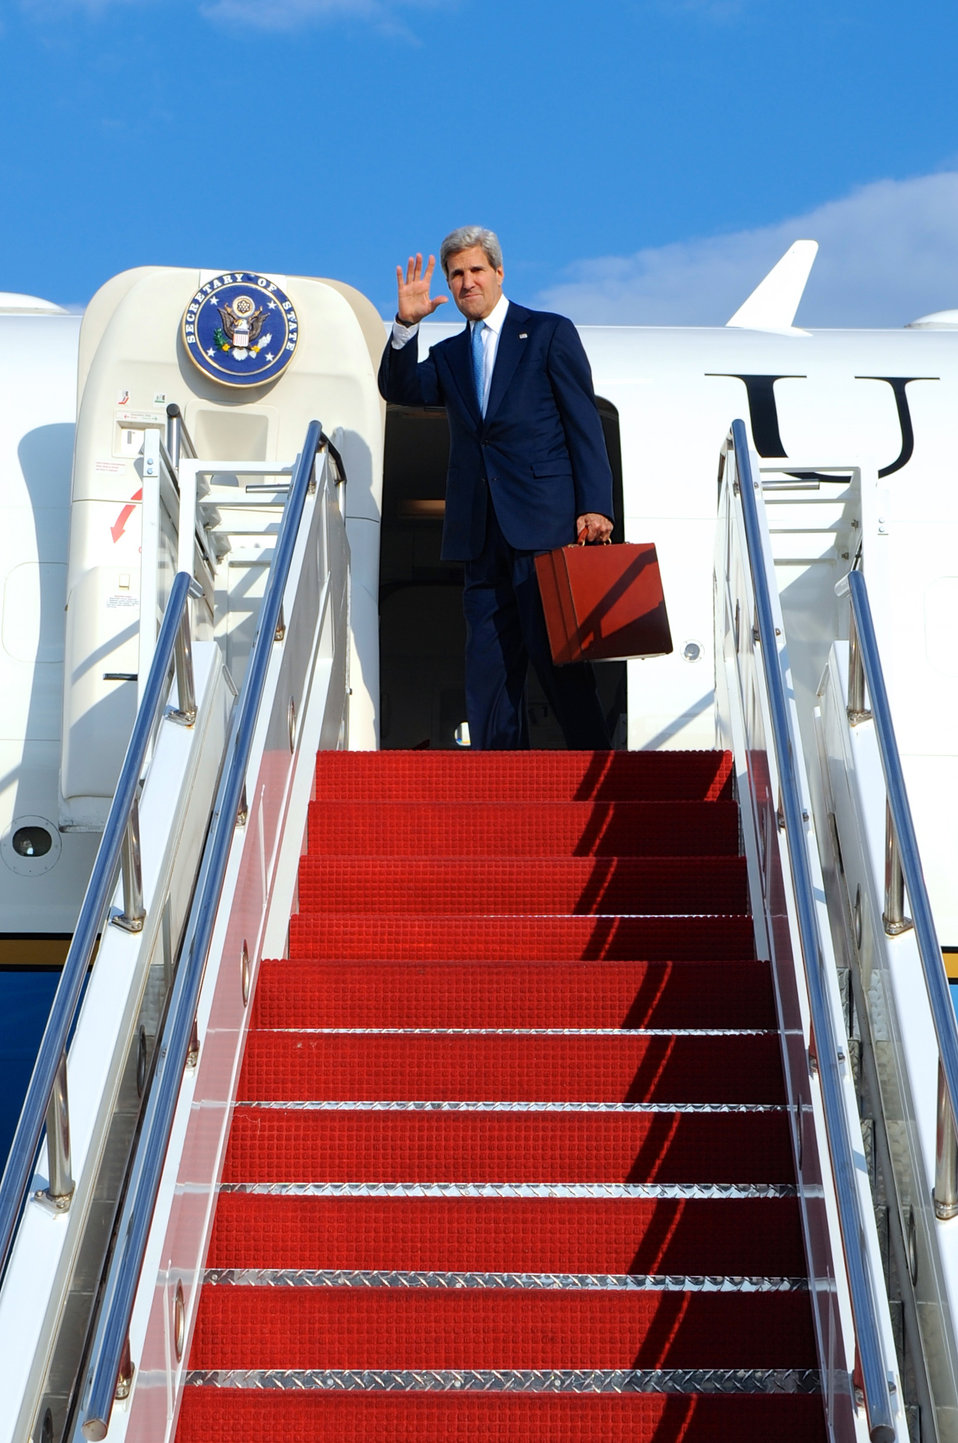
Secretary Kerry Departs for Tokyo, Japan

U.S. Secretary of State John Kerry waves before departing for Tokyo, Japan, October 1, 2013. Secretary Kerry will travel to Tokyo, Japan and Bali, Indonesia October 1-7, 2013.